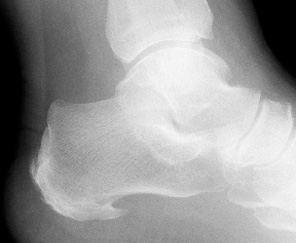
Lateral X-ray of a Calcaneum demonstrating a spur.